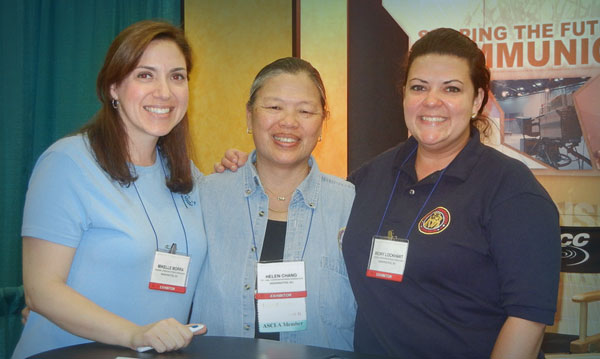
American Library Association conference

Mikelle Mora, Helen Chang, and Becky Lockhart at the American Library Association conference in June, 2011.